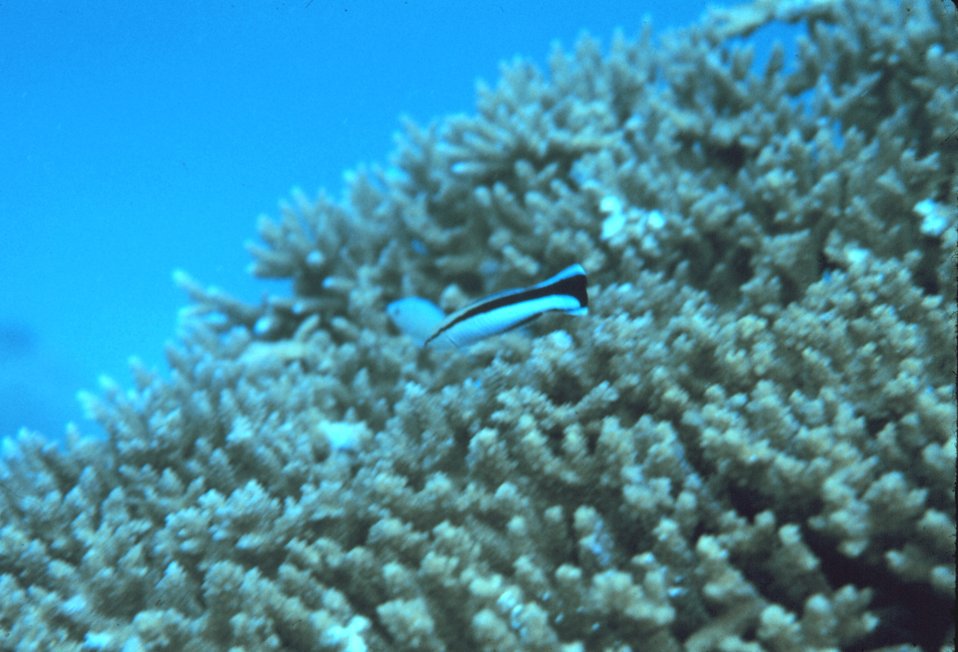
Labroides sp. Cleaning wrasse